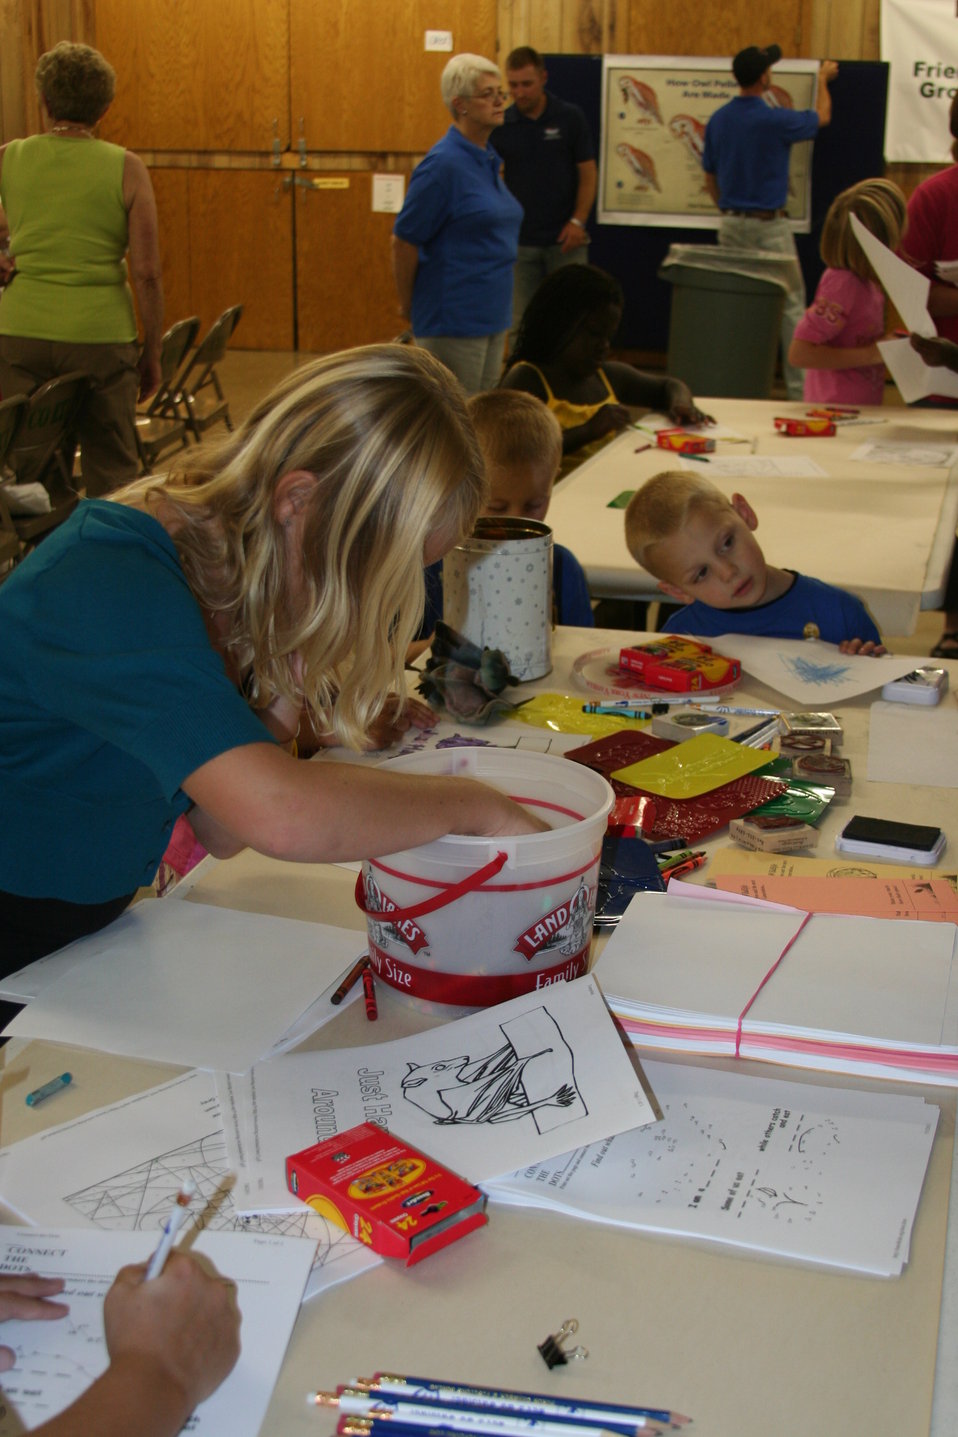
Creatures of the Night 2011

Chidren dissecting owl pellets to see what different kinds of animal bones they can find.